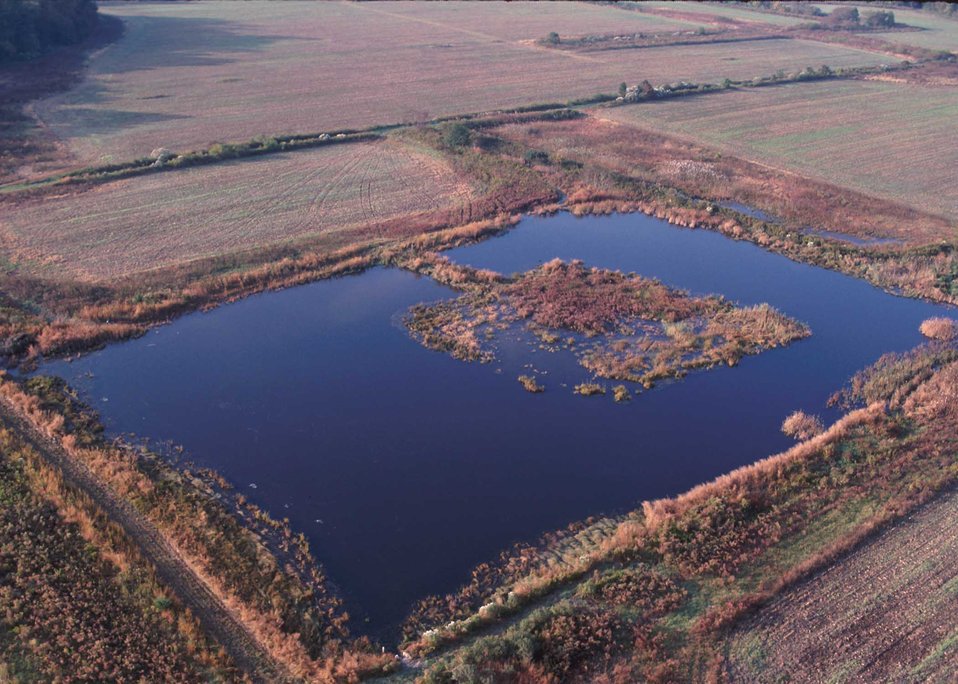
This constructed wetland in Wicomico County, Maryland will provide good habitat for migrating waterfowl.